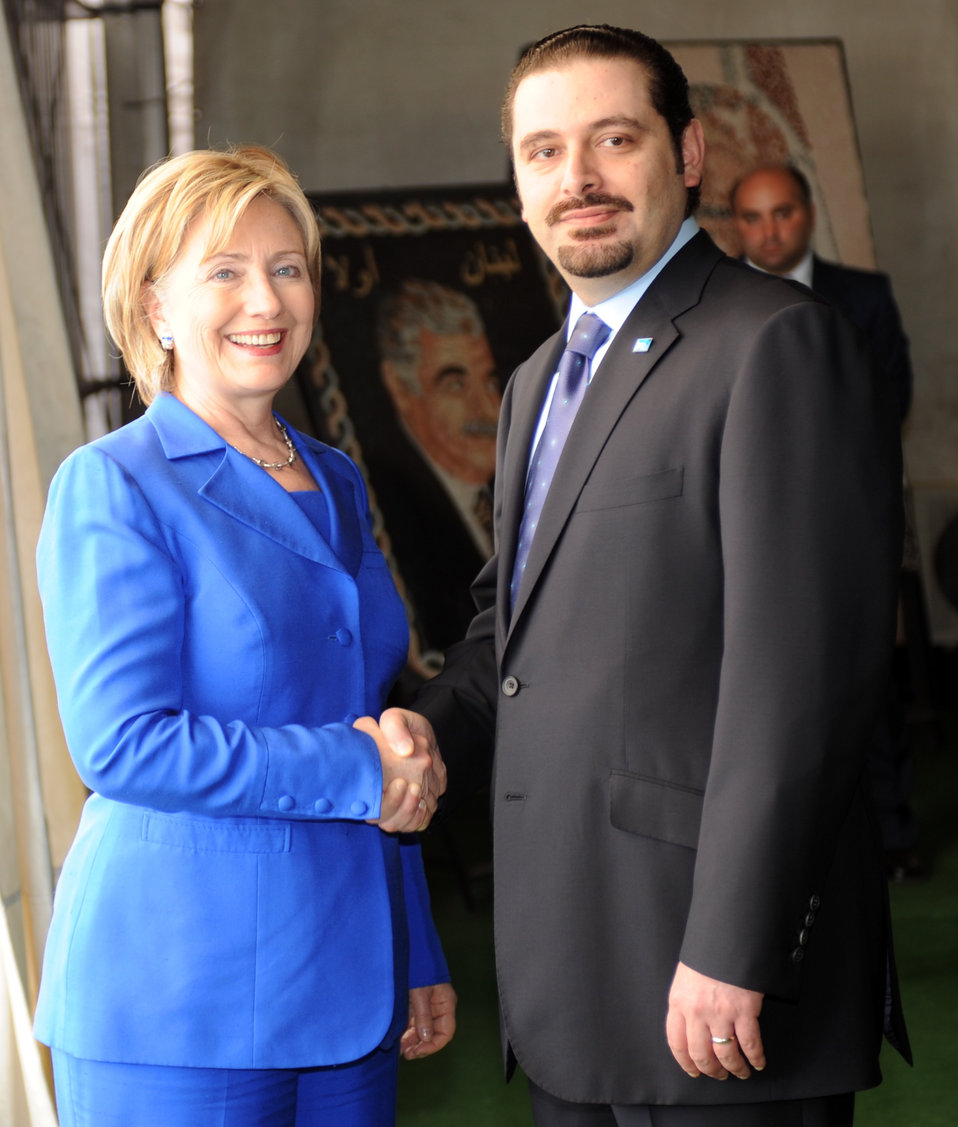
Secretary Clinton Visits With Saad Hariri

U.S. Secretary of State Hillary Rodham Clinton with Saad Hariri at the gravesite of former Lebanese Prime Minister Rafic Hariri in Beirut, Lebanon April 26, 2009.